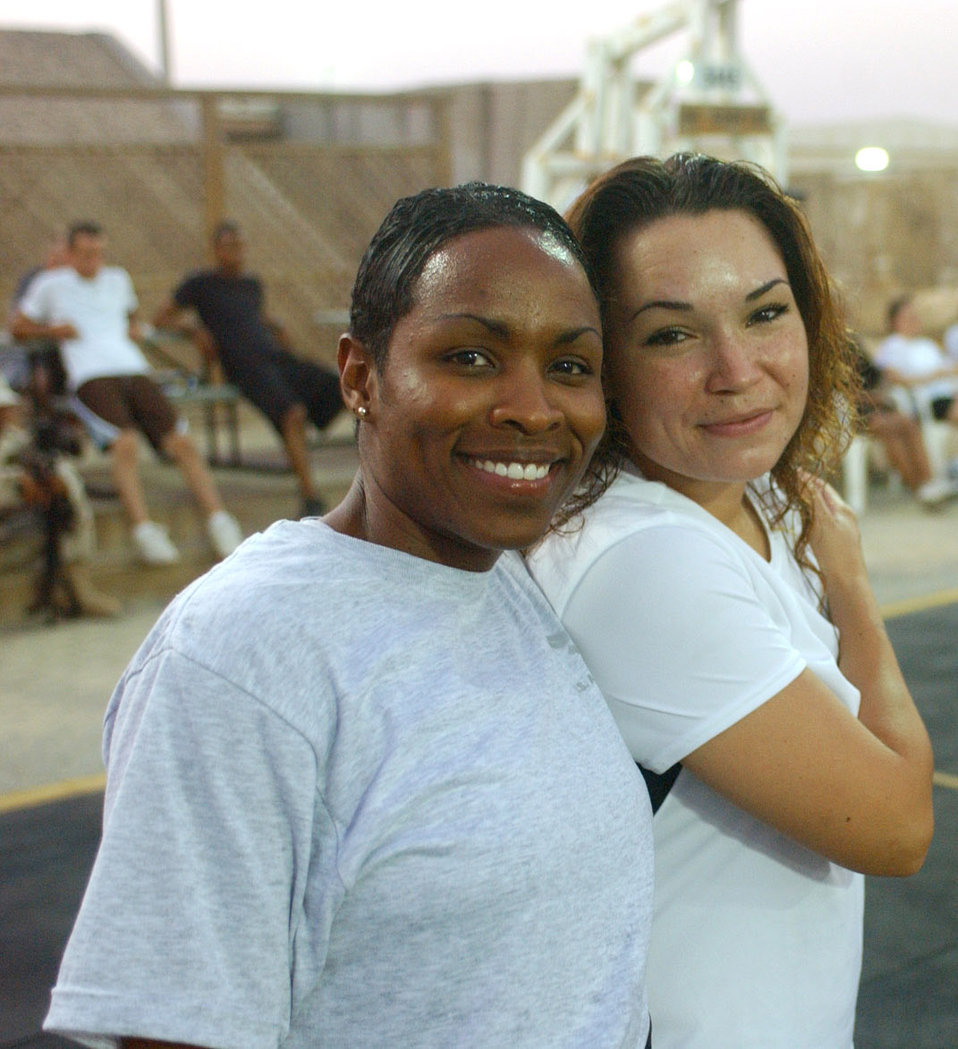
Deployed Airman, professional boxer traveled hard road

SOUTHWEST ASIA -- Tech. Sgt. Kimberly Latimer (left) and Senior Airman Elisha Olivas were two of the top female competitors at a recent powerlifting competition here. Airman Olivas is also a professional boxer with a 4-4-1 record.